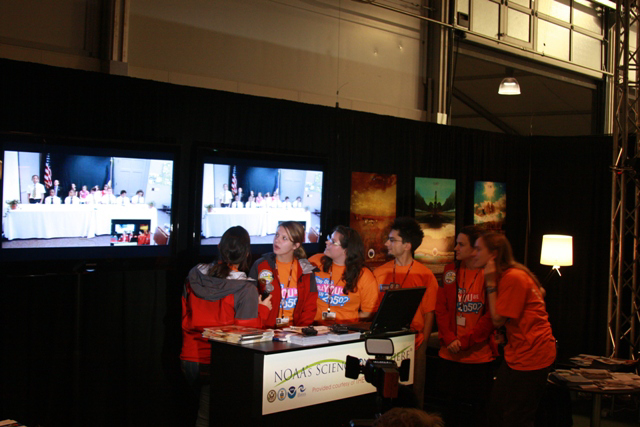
Youth Delegation at COP-15

Members of the youth delegation at COP-15 participate in a DVC with U.S. students in Washington and Virginia sponsored by the U.S. Forest Service at the U.S. Center at COP15, Bella Center, Copenhagen, Denmark on December 11, 2009.